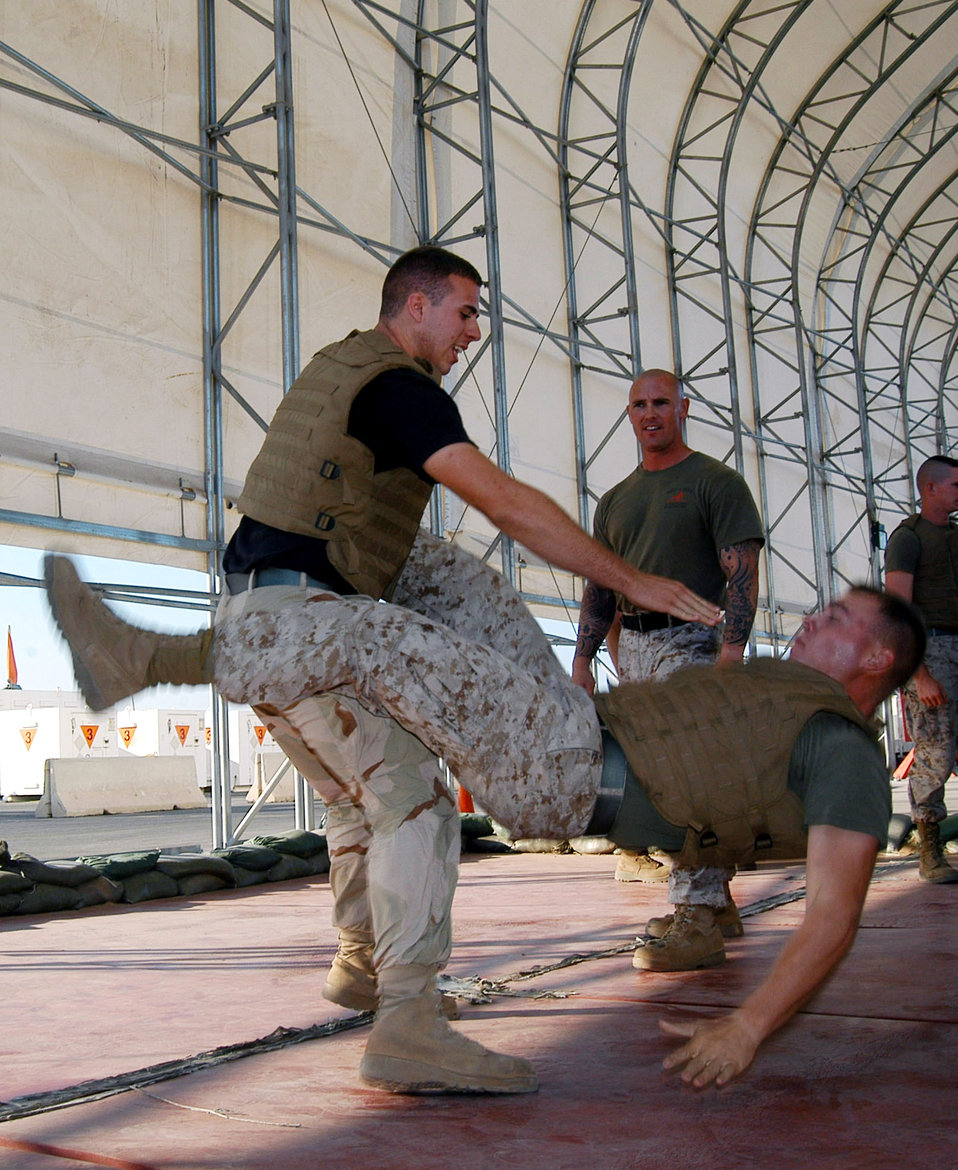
Airman participates in Marine Corps martial arts program

Airman 1st Class Joseph Cawood executes the final phase of a martial arts maneuver on Marine Lance Cpl. Joshua Scrivner as Marine Staff Sgt. Jody Armentrout (behind) watches Dec. 22 at Camp Lemonier, Djibouti. Airman Cawood is participating with Marines in the sustainment course for green belts during the Marine Corps Martial Arts Program. In order to receive their green belts, students will train and practice more than 128 hours. Airman Cawood, a Buxton, Maine, native, is an aerospace ground equipment technician for the 81st Expeditionary Rescue Squadron and Lance Cpl. Scrivner, a Midland, Texas, native, is a ground support equipment technician for the Marine Heavy Helicopter Squadron 464. Staff Sgt. Armentrout, a Cedar Park, Texas, native, is the Marine Aviation Logistics Squadron 26 staff NCO in charge.